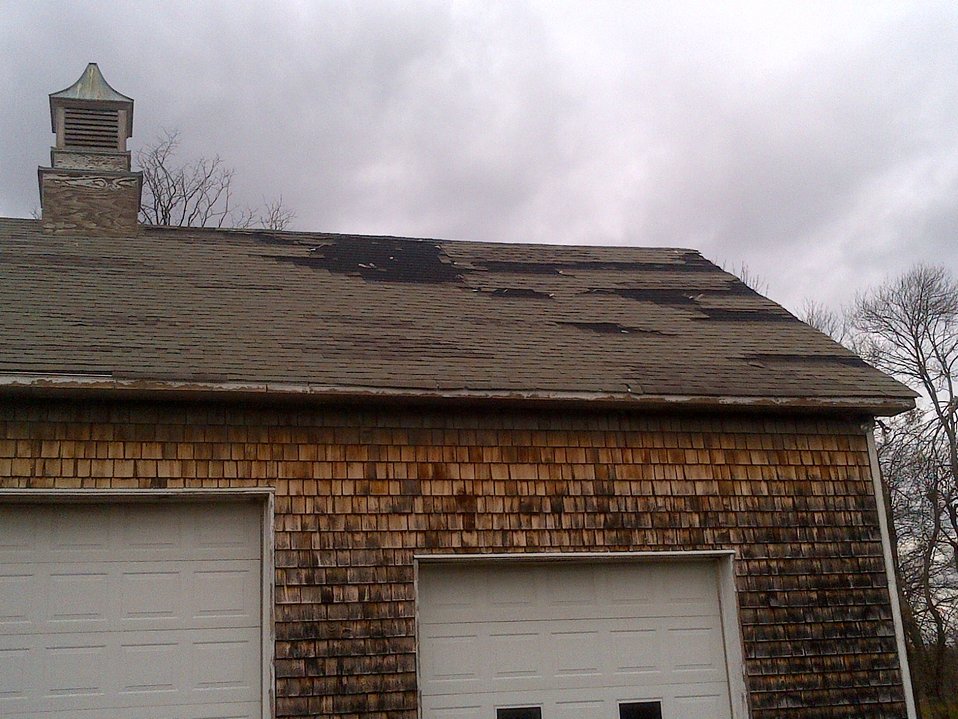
Hurricane Sandy caused damage at Great Swamp National Wildlife Refuge (NJ)

Storm damage to the roof of the Tielman storage garage.